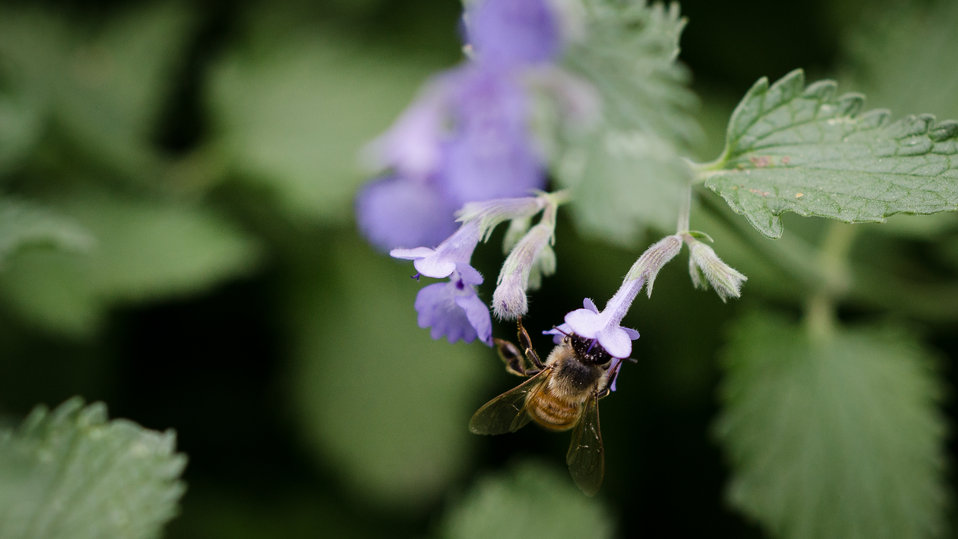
A honey bee is attracted to flowers in the U.S. Department of Agriculture People's Garden, outside the headquarters' Whitten Building in Washington, D.C., on Tuesday, May 21, 2013.This flower attracts bees because it provides nectar for the hive to feed on. Other plant in the garden have pollen that other bees will feed on. The bees gather pollen from many flowers and aide in pollination by moving from plant to plant.